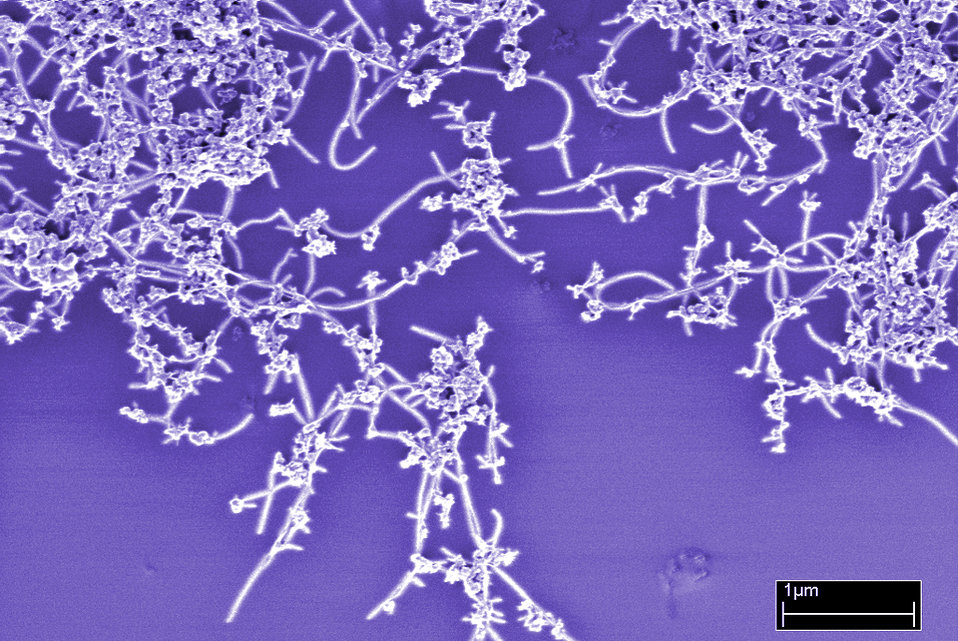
Carbon Nanotubes

A new NIST method for rapidly assessing the quality of carbon nanotubes was evaluated in part by comparing the results to electron micrographs, which revealed uneven composition such as large bundles of nanotubes and impurities such as metallic particles. (Color added.)